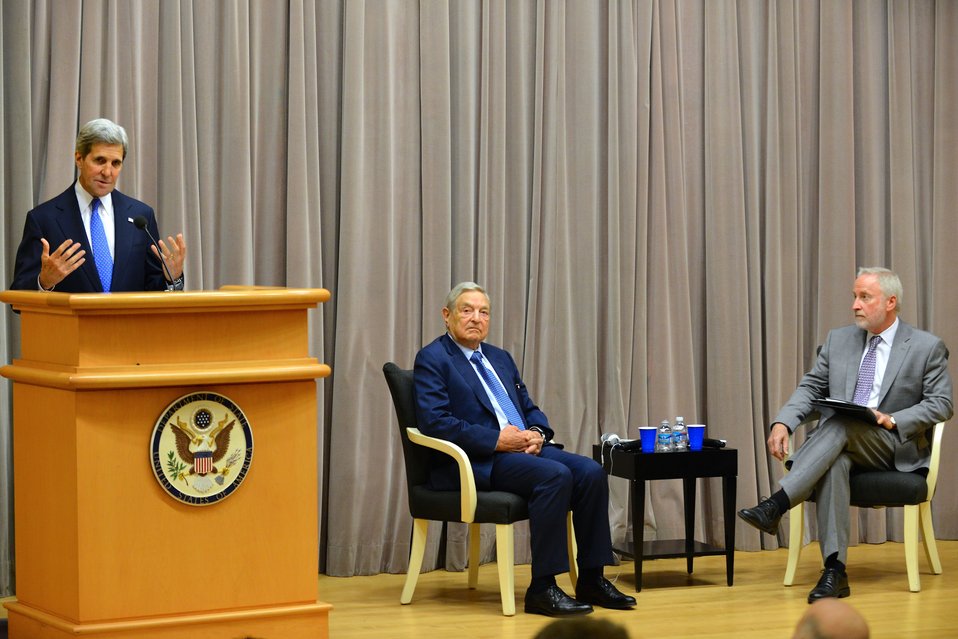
Secretary Kerry Introduces George Soros to the Open Forum

U.S. Secretary of State John Kerry introduces financier and philanthropist George Soros, who spoke with Assistant Secretary for Public Affairs Doug Frantz about strengthening civil society, democracy, and the world economy at the U.S. Department of State's Open Forum in Washington, D.C., on May 13, 2014.